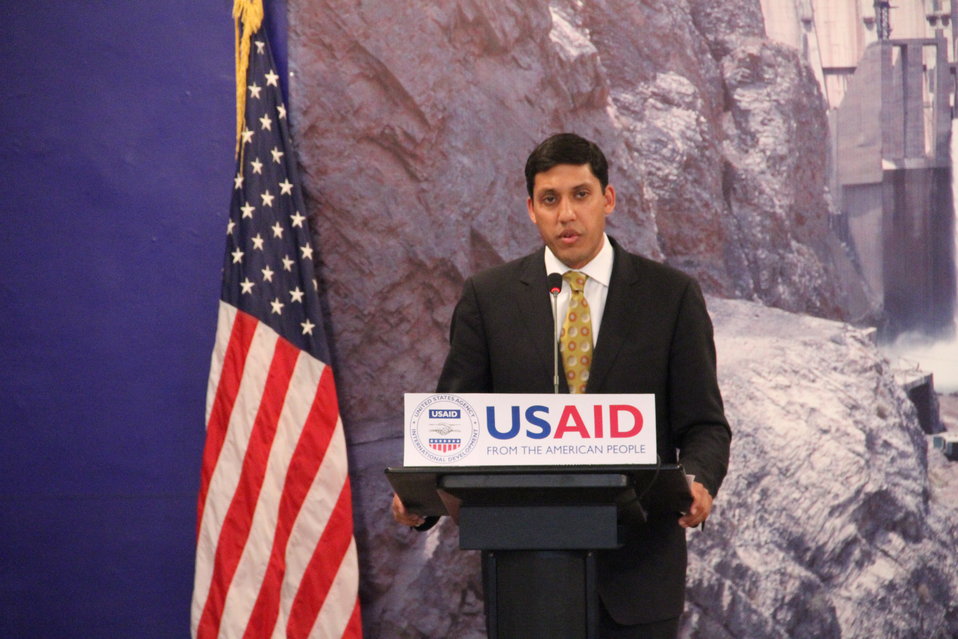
Photo Exhibition Celebrate US-PAK Cooperation at PNCA, Islamabad on April 13, 2012

Dr. Rajiv Shah, Administrator for USADI Address the Participants & media